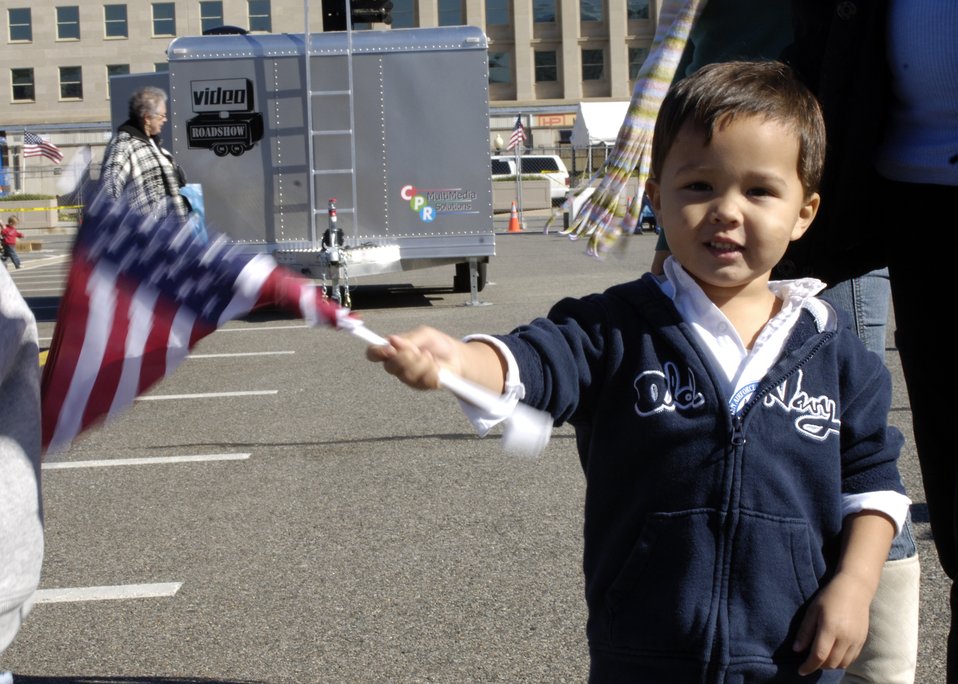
Patriotic Enthusiasm

B. Hayden Braham shows his enthusiasm during a performance by members of the United States Air Force Drill Team during the Air Force open house at the Pentagon on Saturday, Oct. 14, 2006. The open house is running in conjunction with the official ceremony to dedicate the Air Force Memorial. President George W. Bush will join Senior Defense Dept. and Air Force officials in a ceremony to present the memorial to the Nation. Desiged by the late James Ingo Freed the memorial with its three soaring spires inspired by the U.S. Air Force Thunderbirds bomb burst manuever, pays tribute to and honors the patriotic men and women of the U.S. Air Force and its predeccessor organizations. An open house will run near the Pentagon in conjunction with the dedication ceremony which will feature performances by the U.S. Air Force Band, the U.S. Air Force Honor Guard drill team, and will culminate with a concert featuring country music performer LeeAnn Womack.